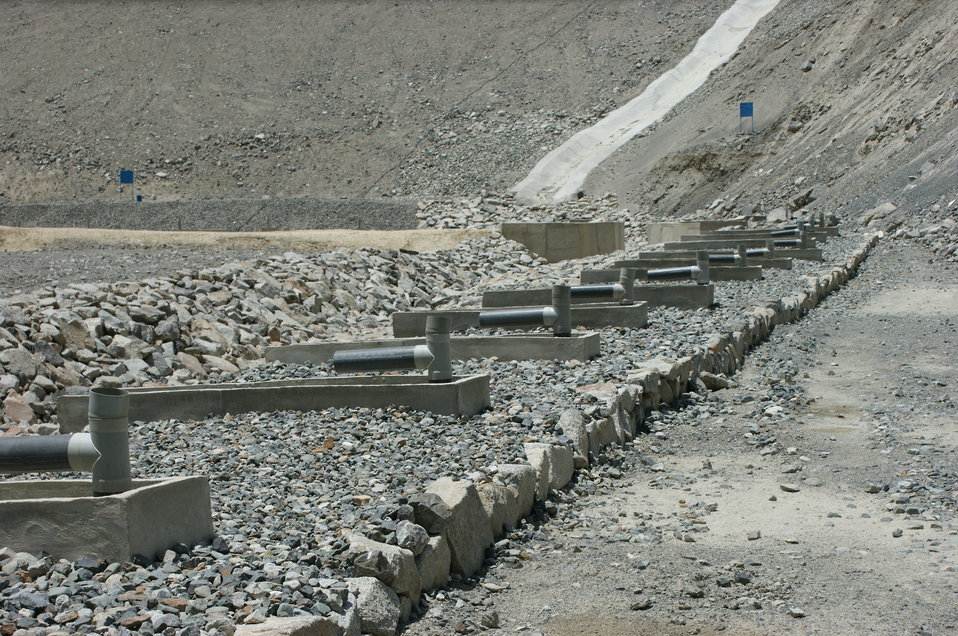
Satpara